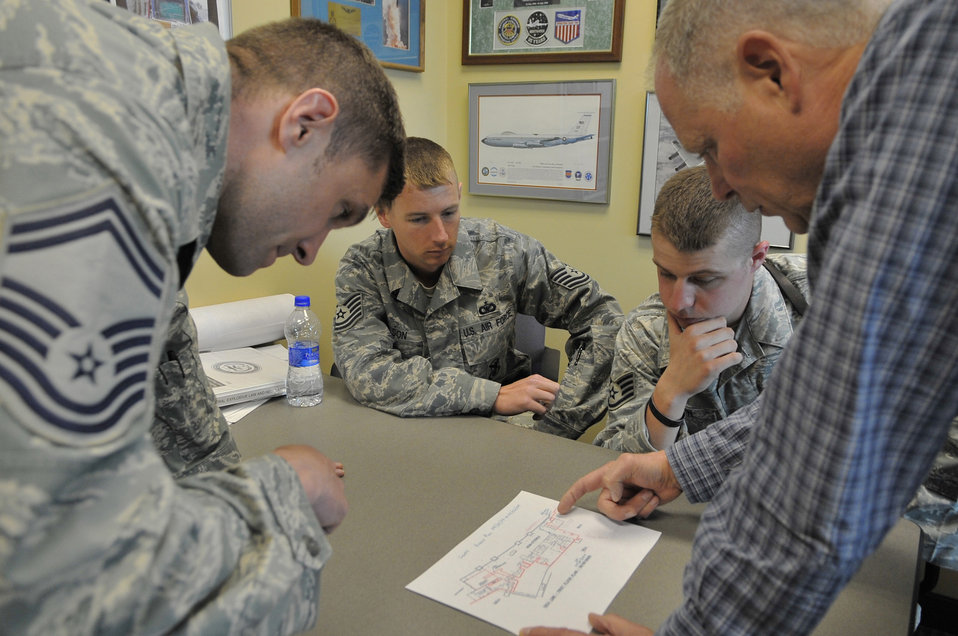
Working dog, EOD team partner to secure Alaska's interior

Senior Master Sgt. Albert Schneider, Tech. Sgt. Robert Wilson, Staff Sgt. Robert Brown and Kim Ellard look at a map of the new wing at the Fairbanks International Airport May 5. Teams from Eielson Air Force Base?s Security Forces Squadron and the explosive ordnance disposal flight assisted the Department of Homeland Security to clear the new wing of threats. Sergeant Schneider is assigned to the 354th Civil Engineer Squadron EOD flight, Sergeants Wilson and Brown are assigned to the 354th SFS, and Mr. Ellard is assigned to the DHS.